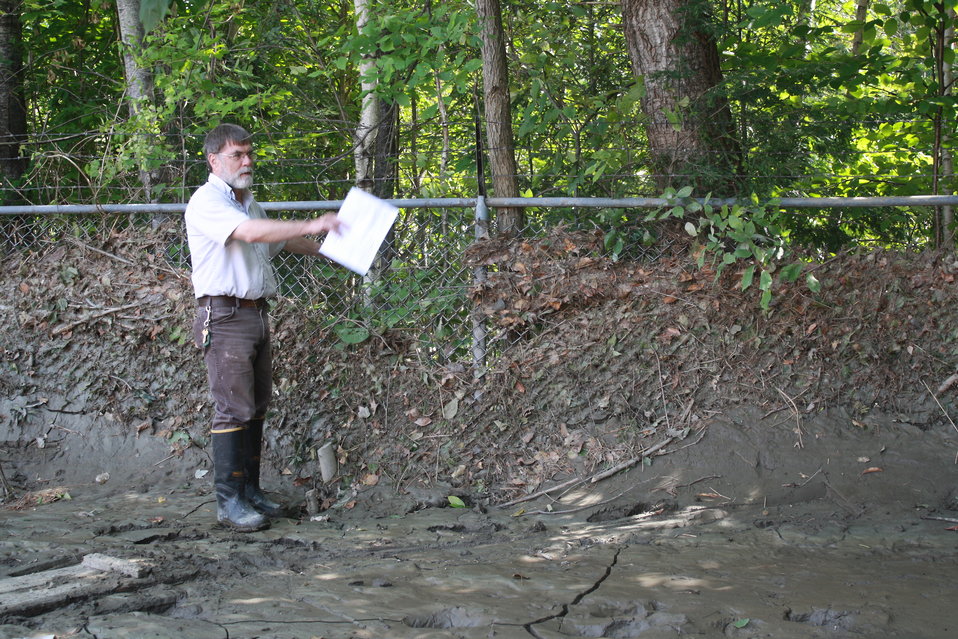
High water point on fence

White River National Fish Hatchery project leader Ken Gillette shows high water mark from Hurricane Irene flood event on a fence. Ken is standing on top several feet of sediment, the fence is usually about 8 feet high.